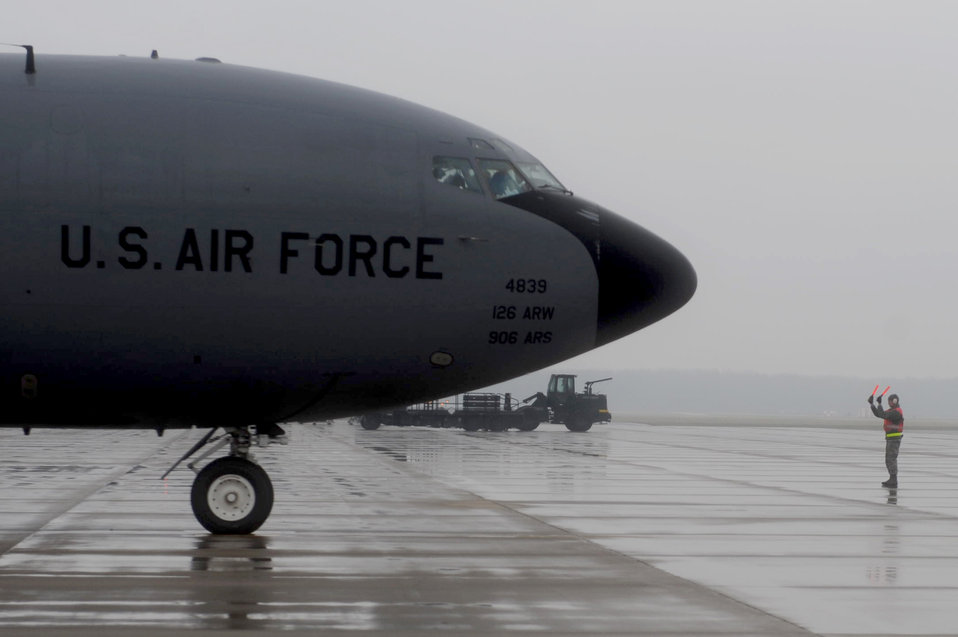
Guardsmen deploy in support of Operation Odyssey Dawn

A member of the Illinois Air National Guard's 126th Air Refueling Wing marshals a KC-135 Stratotanker March 25, 2011, at Scott Air Force Base, Ill., in preparation for deployment in support of Operation Odyssey Dawn.